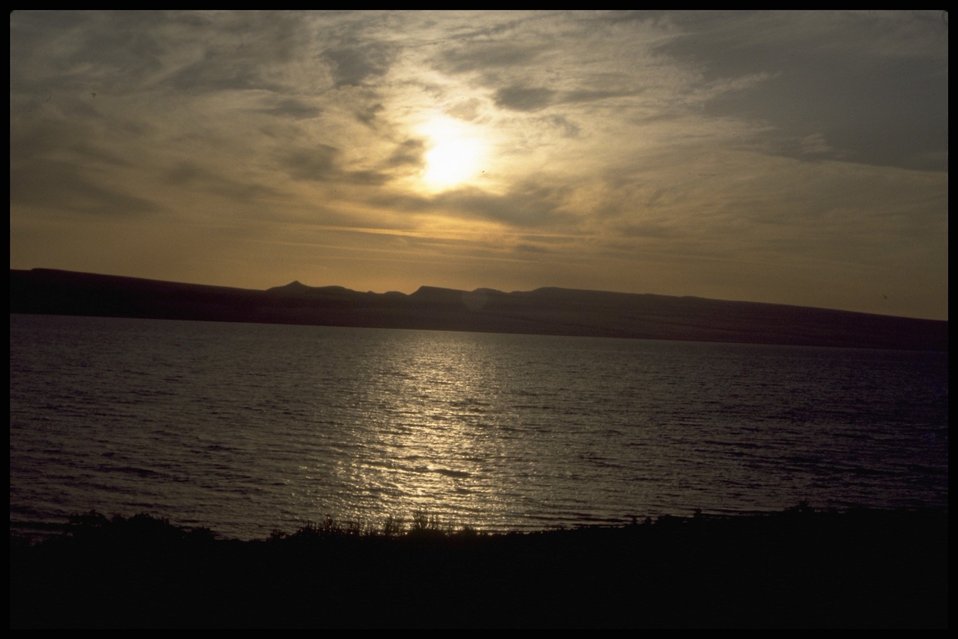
Sunset over Lake Abert, Lakeview District.